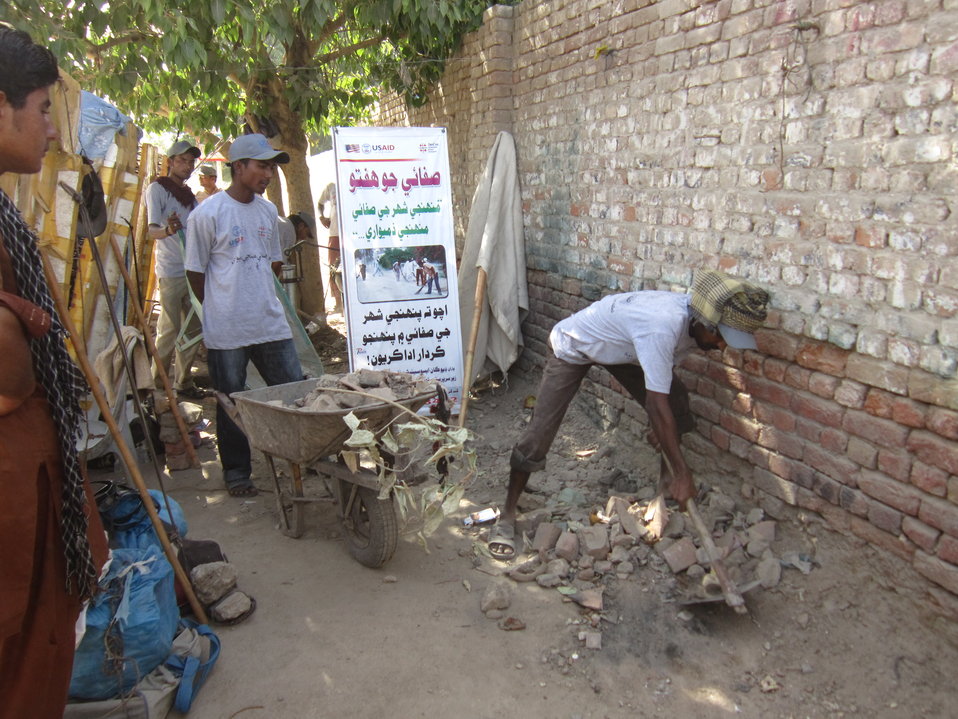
Caption 8 - DevCon - Shahdadpur - Hafta Safai

Volunteers can be seen actively working on cleaning their neighborhood during a week-long cleaning drive in collaboration with the Taluqa Municipal Administration (TMA) in Shahdadpur, district Sanghar, Sindh. The drive was a part of a project on municipal oversight in the said taluqa (township), being implemented by DevCon, an Association for Rural Development under USAID’s Citizens’ Voice Project.